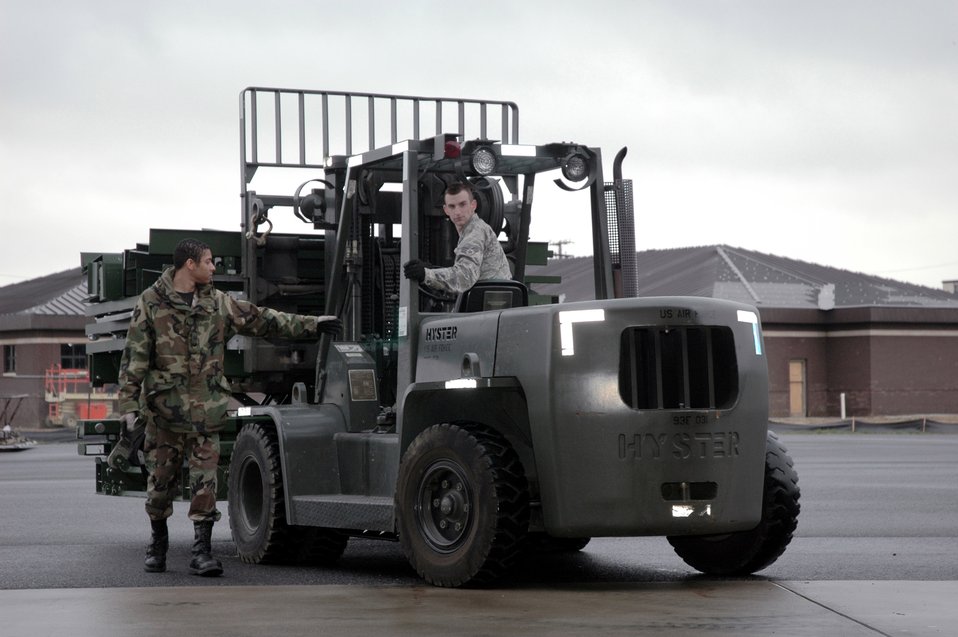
New hydraulic lift aims to boost contingency capabilities

Airmen from the 816th Global Mobility Squadron at McGuire Air Force Base, N.J., use a forklift to move a deployable-hydraulic lift for assembly as part of a demonstration for the Air Mobility Battlelab. The AMB, located in the U.S. Air Force Expeditionary Center on Fort Dix, N.J., coordinated the demonstration as part of a new Initiative which aims to help contingency-response Airmen have an easier time moving cargo in deployed locations.